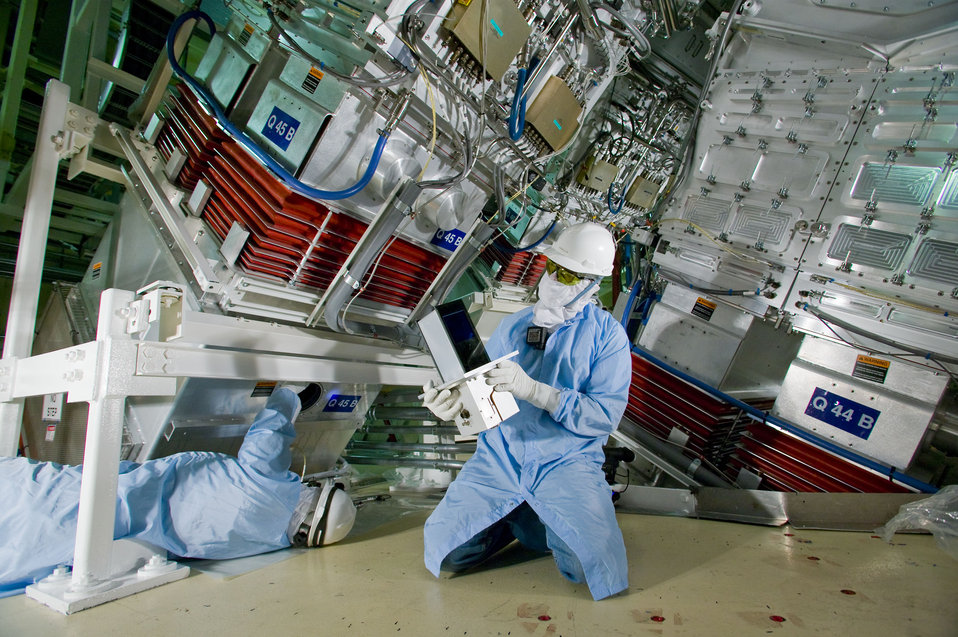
Lawrence Livermore National Laboratory technicians John Hollis (right) and Jim McElroy install a side camera in the target bay of the National Ignition Facility (NIF).

The camera was the last if NIF's 6,206 various opto-mechanical and controls systems modules called Line Replaceable Units or LRU's to be installed. The first LRU, a flashlamp, was installed on September 26, 2001. When complete. NIF scientific experiments will demonstrate ignition and provide the platform for conducting high-energy density experiments in support of stockpile stewardship program, fusion energy and frontier science.